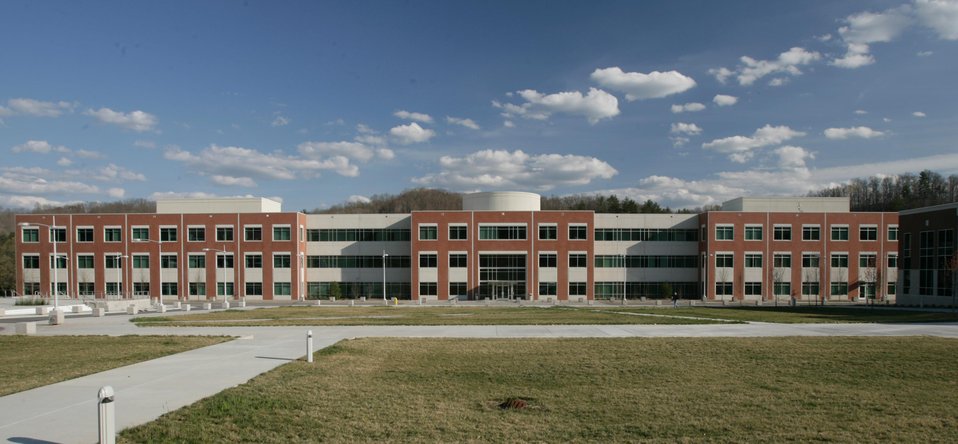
BUILDINGS ON THE SOUTH SIDE OF THE QUAD HOUSE AT THE OAK RIDGE LEADERSHIP COMPUTING FACILITY.